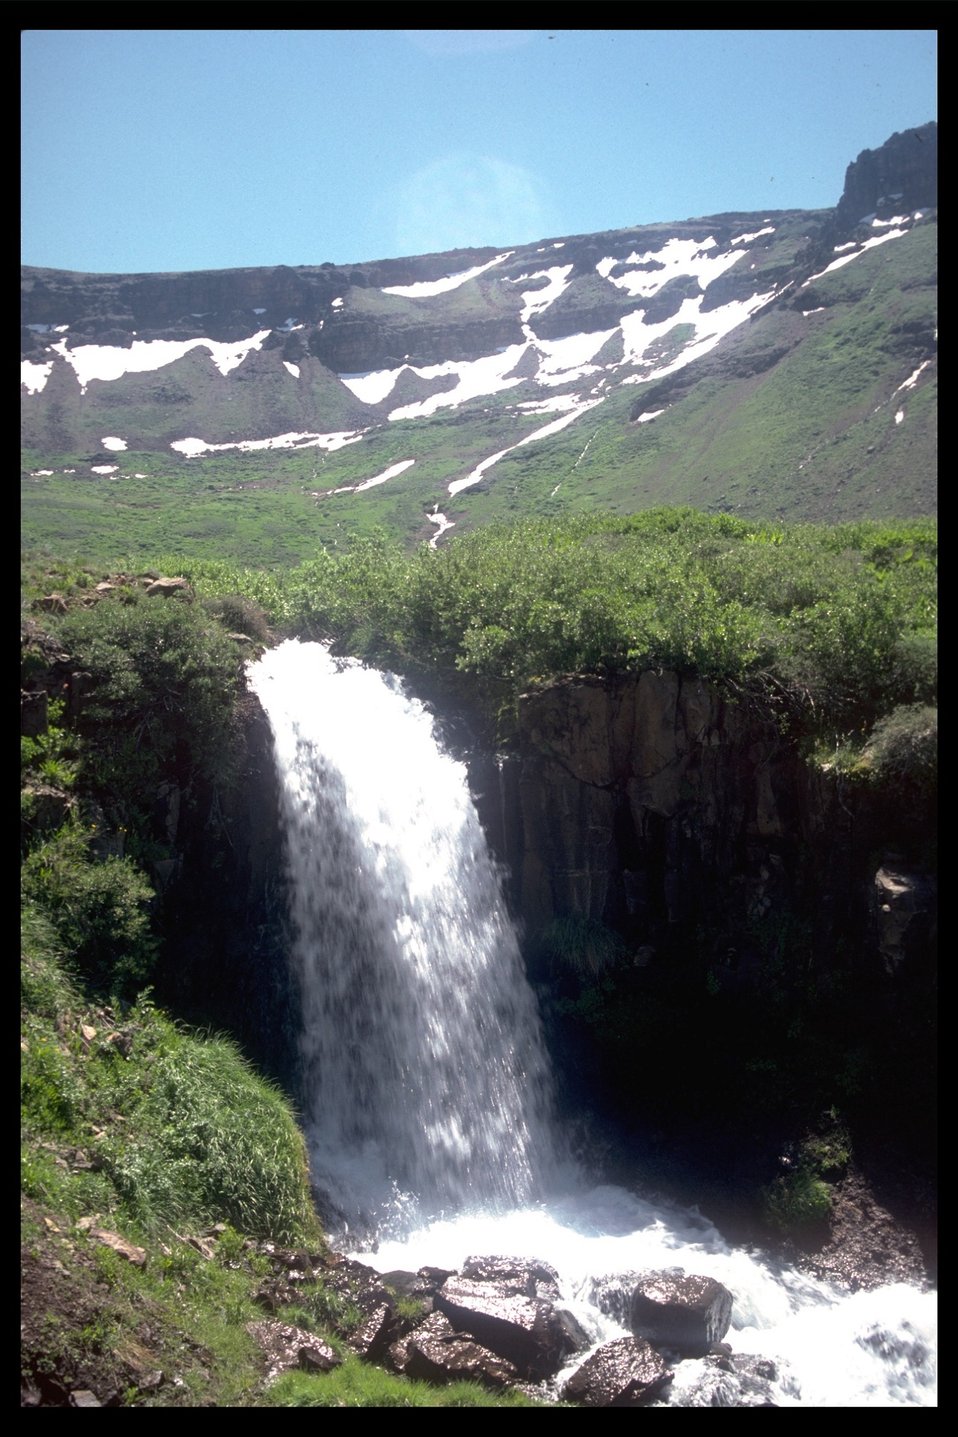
Little Blitzen waterfall in the Steens area. (WSA 2-86F)